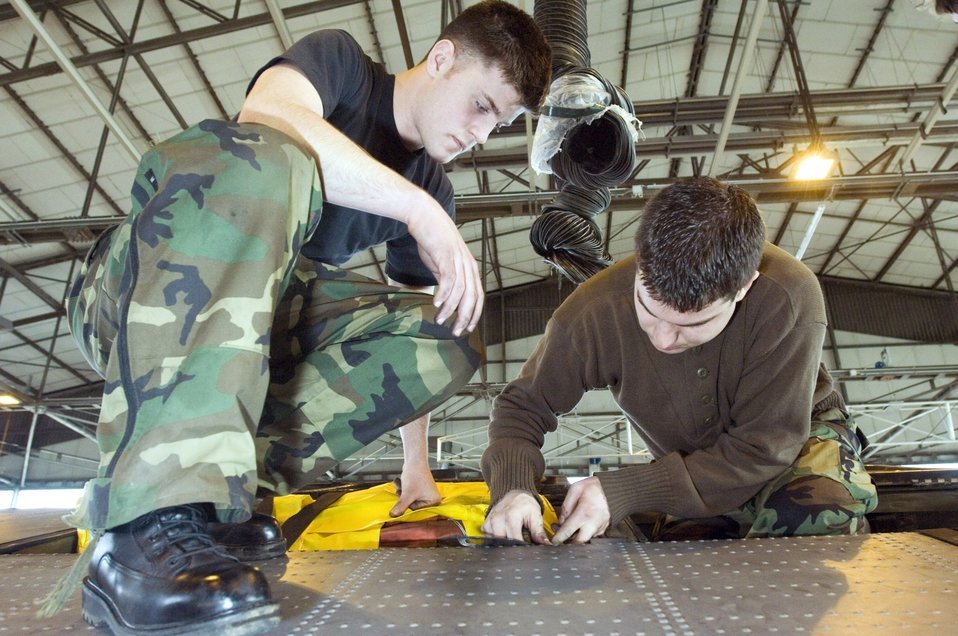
Herc operations

Airman 1st Class Beau Strausbaugh and Senior Airman Andrew Tishim, left to right, install a life raft into a C-130 Hercules at Ramstein Air Base, Germany, on Monday, March 27, 2006. The Airmen are Hercules crew chiefs with the 86th Aircraft Maintenance Squadron.